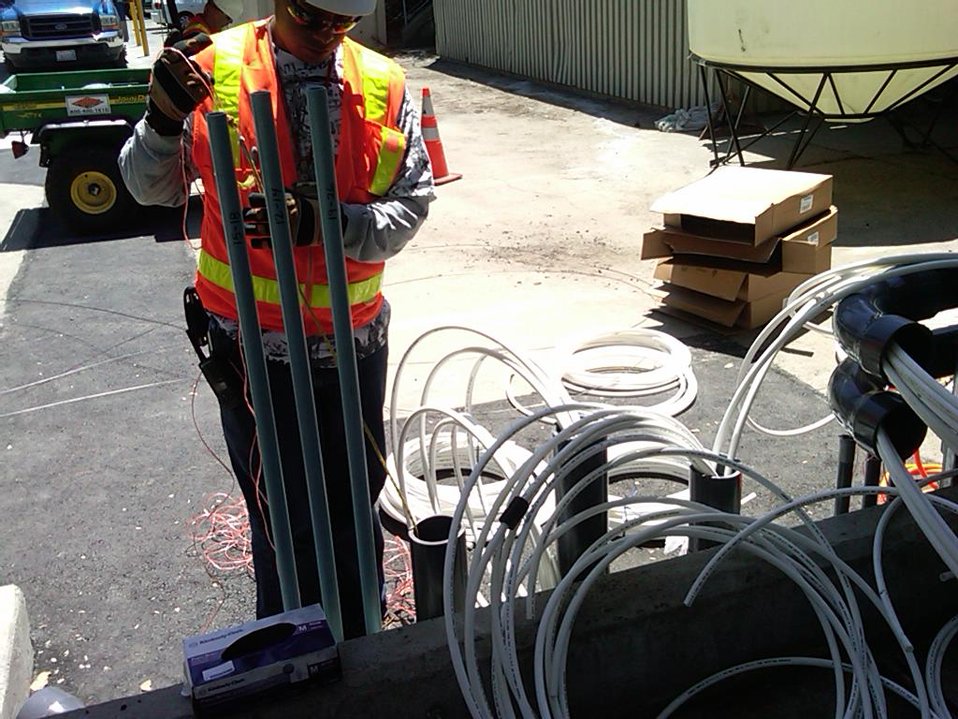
Recovery Act Supports Soil and Debris Cleanup, Groundwater Treatment at SLAC

Recovery Act workers are on track to remove more than 30,000 cubic yards of contaminated soil and debris at the SLAC National Accelerator Laboratory by September 2011.
The Recovery Act invested $14.3 million in legacy cleanup activities at SLAC. In addition to removing contaminated soil and debris that is shipped to local disposal facilities, Recovery Act workers installed three new groundwater treatment systems.